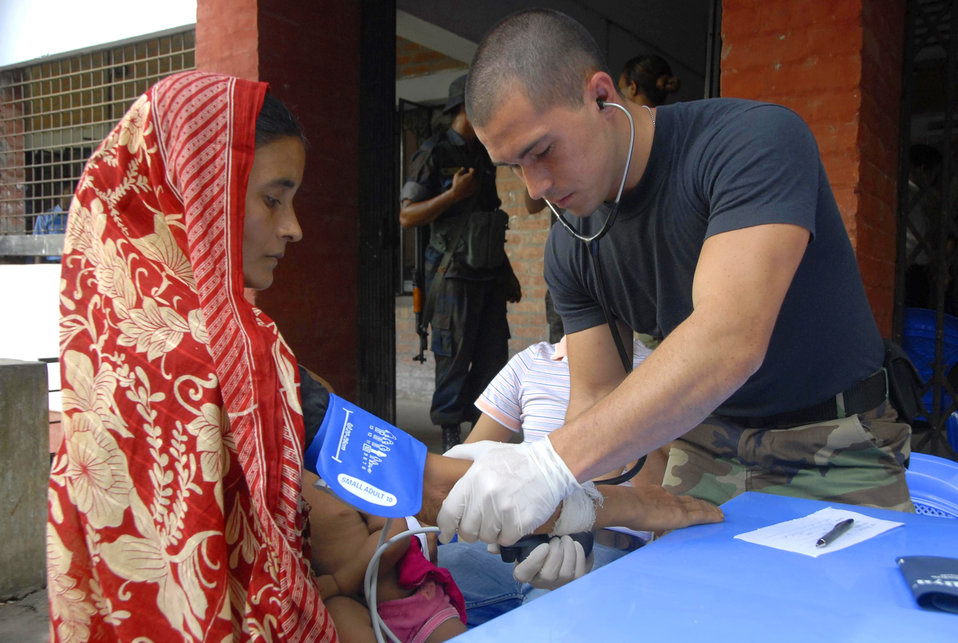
Patient care top priority

Senior Airman Josh Burns checks the blood pressure of a local Bangladeshi woman June 13, 2010, at Monirampur Regional Training Center in Jessore, Bangladesh, as part of Operation Pacific Angel. Operation Pacific Angel is a joint and combined humanitarian assistance operation conducted in the Pacific area of responsibility to support U.S. Pacific Command's capacity-building efforts. Airman Burns is a medic from 3rd Medical Operations Squadron at Elmendorf Air Force Base, Alaska,